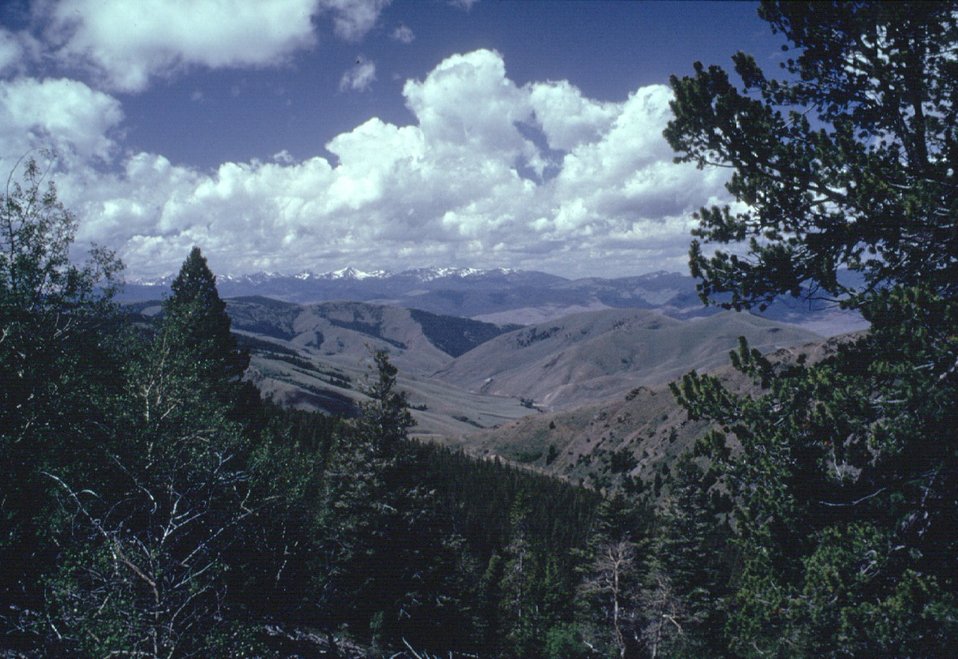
Lemhi Pass Lewis and Clark National Historic Trail Salmon Field Office UCSC Upper Columbia Salmon Clearwater